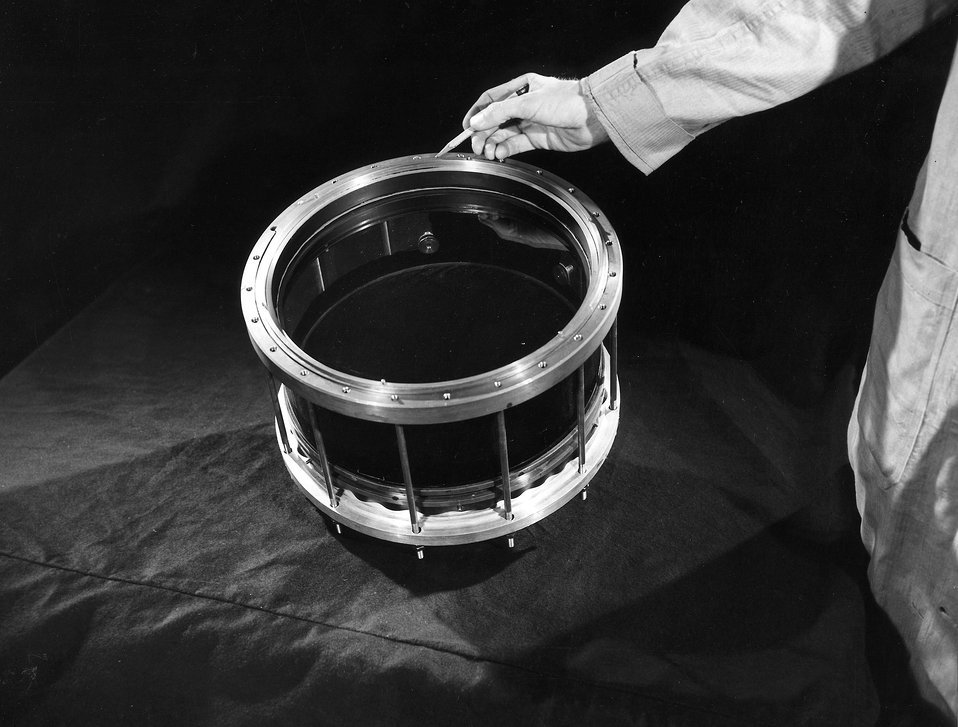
The Wilson Cloud Chamber at AEC's Brookhaven National Laboratory is used for cosmic ray studies. c. 1955